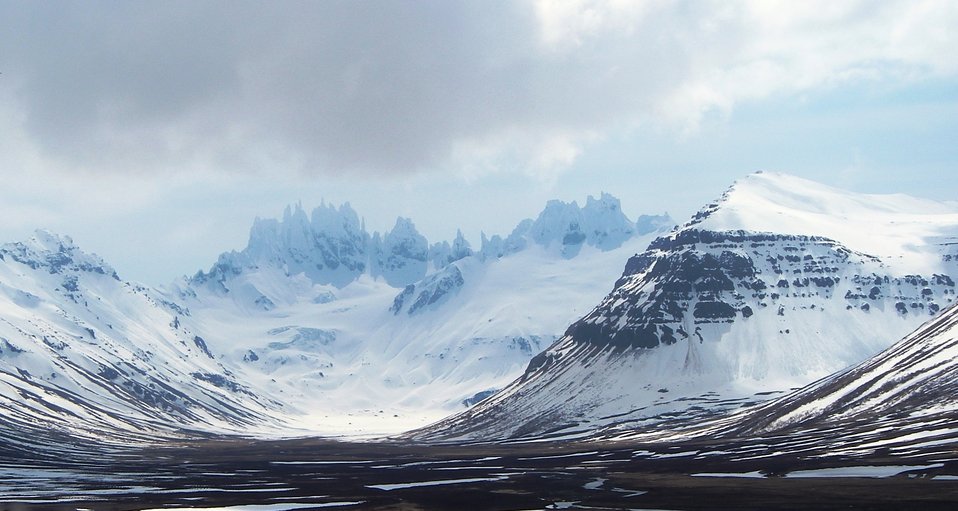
Izembek Wilderness

Joshua Green area, Izembek Wilderness, Izembek National Wildlife Refuge
Photo by Kristine Sowl,
USFWS, Public Domain